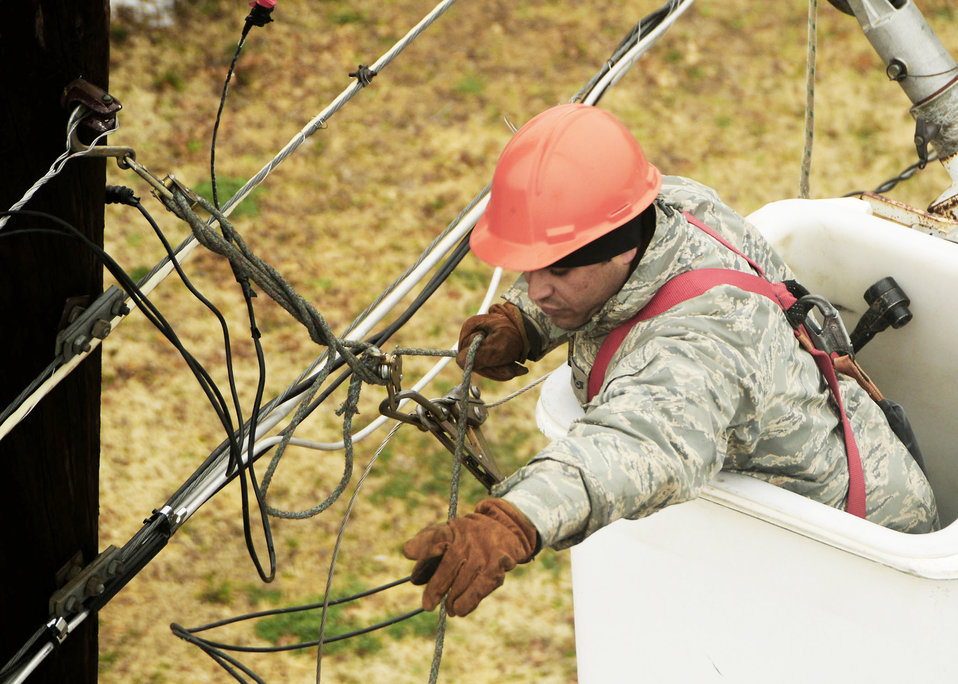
Altus training operation begin to recover from ice storm

Staff Sgt. Armando Irizarry repairs a power line near the base dormitories Feb 3, 2010, at Altus Air Force Base, Okla. Sergeant Irizarry is assigned to the 37th Civil Engineer Squadron at Lackland AFB, Texas.